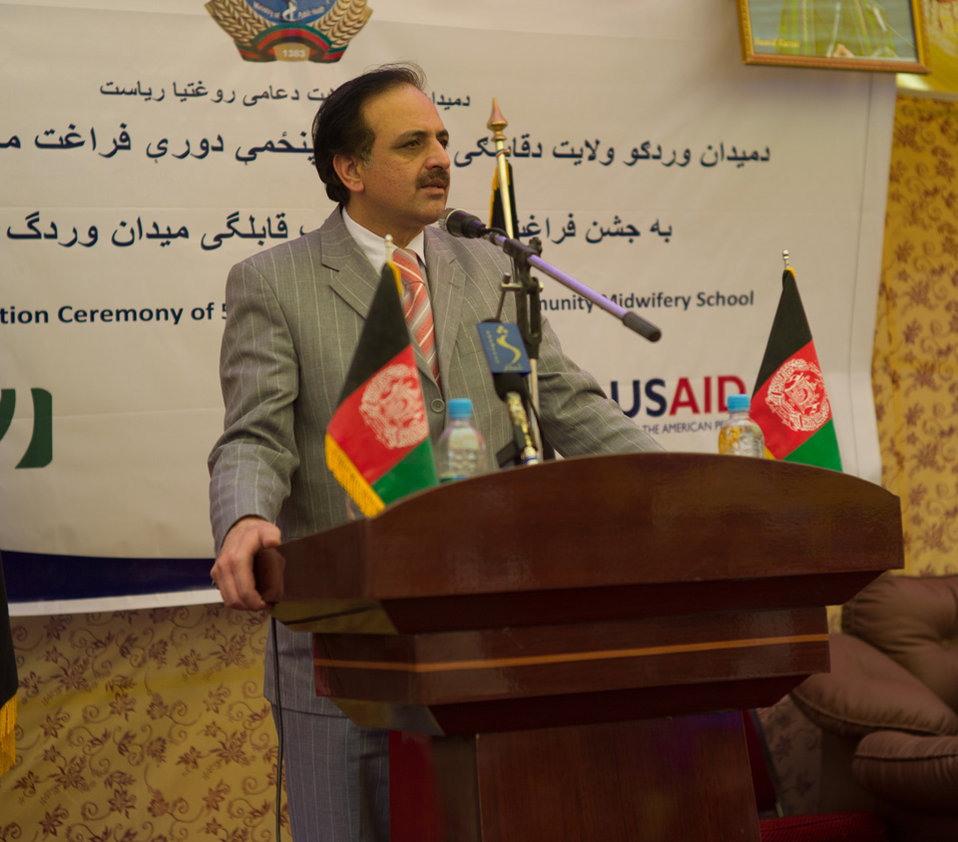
Deputy Minister Fahim